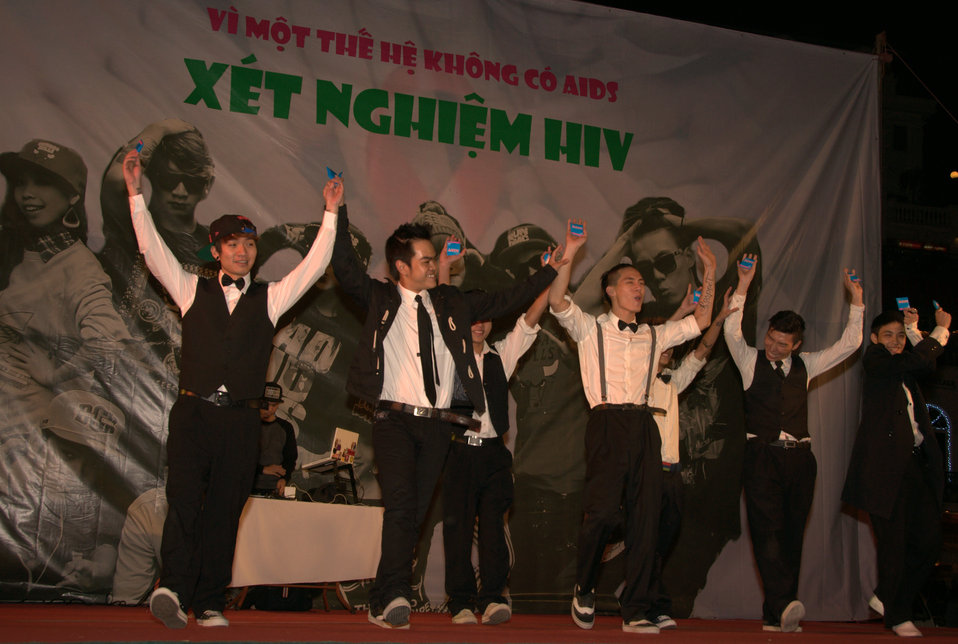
USAID and PEPFAR supports an outdoor concert to promote Vietnam's national action month for HIV

Hanoi, December 18, 2012.